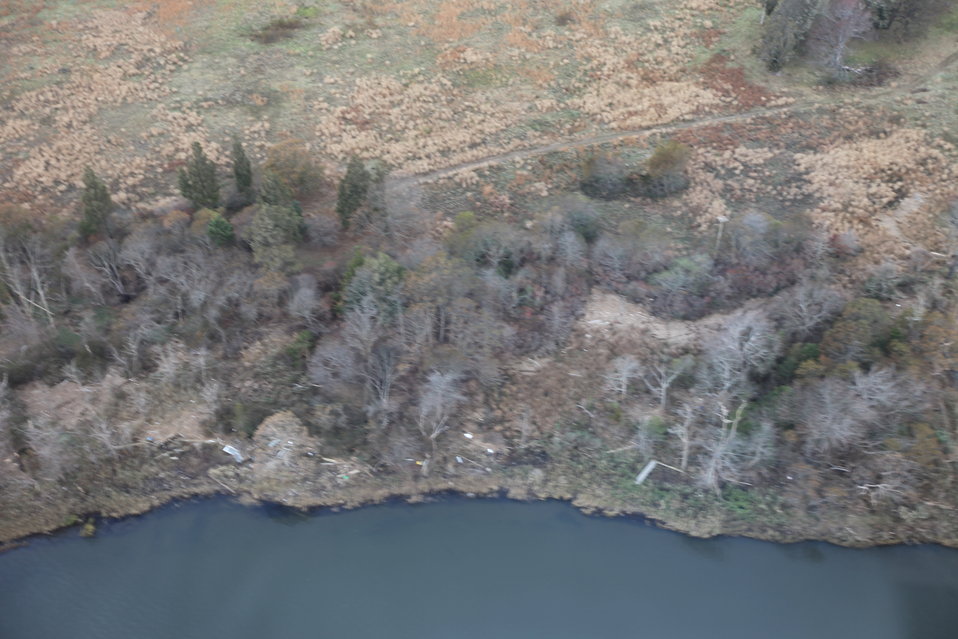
Debris on shore line of Seatuck National Wildlife Refuge (NY)

Debris left by storm Sandy along the shoreline at Seatuck National Wildlife Refuge.